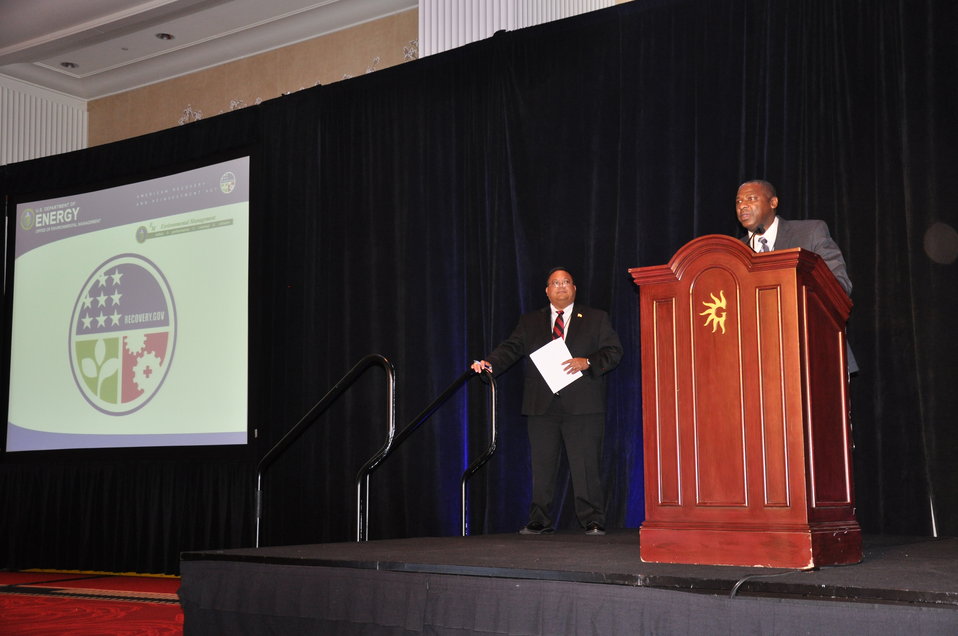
Recovery Act Program Targets Important White House Goal of Footprint Reduction

EM Recovery Act Program Deputy Director Thomas Johnson speaks during the Information Exchange as Savannah River Site Recovery Act Program Deputy Director Rodrigo V. Rimando, Jr., listens in the background.

Recovery Act funds are helping EM keep on pace to reduce the Cold War-era legacy waste site footprint by 40 percent in September 2011.